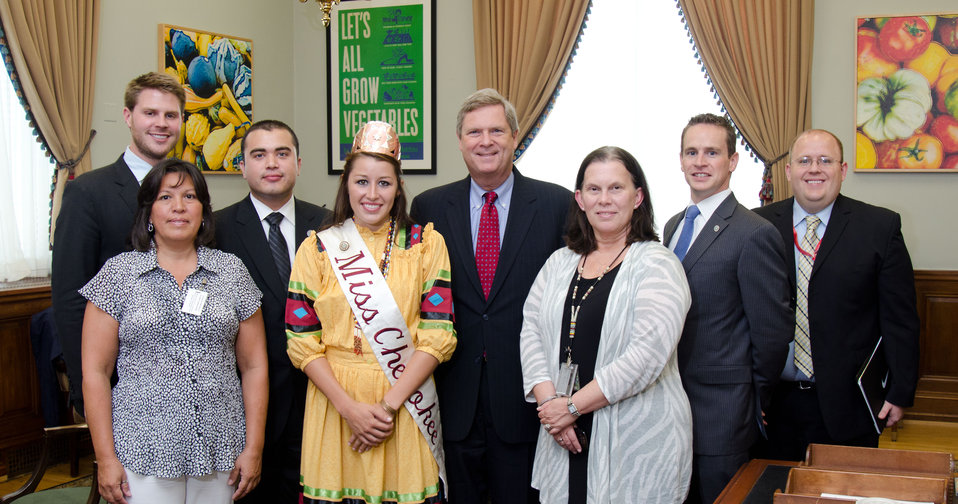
Miss Cherokee 2010-2011 Brooke Hudson (center left) and officers of the Cherokee nation met with U.S. Department of Agriculture Secretary Tom Vilsack (center right) met in Washington, DC, on Tuesday, August 9, 2011.